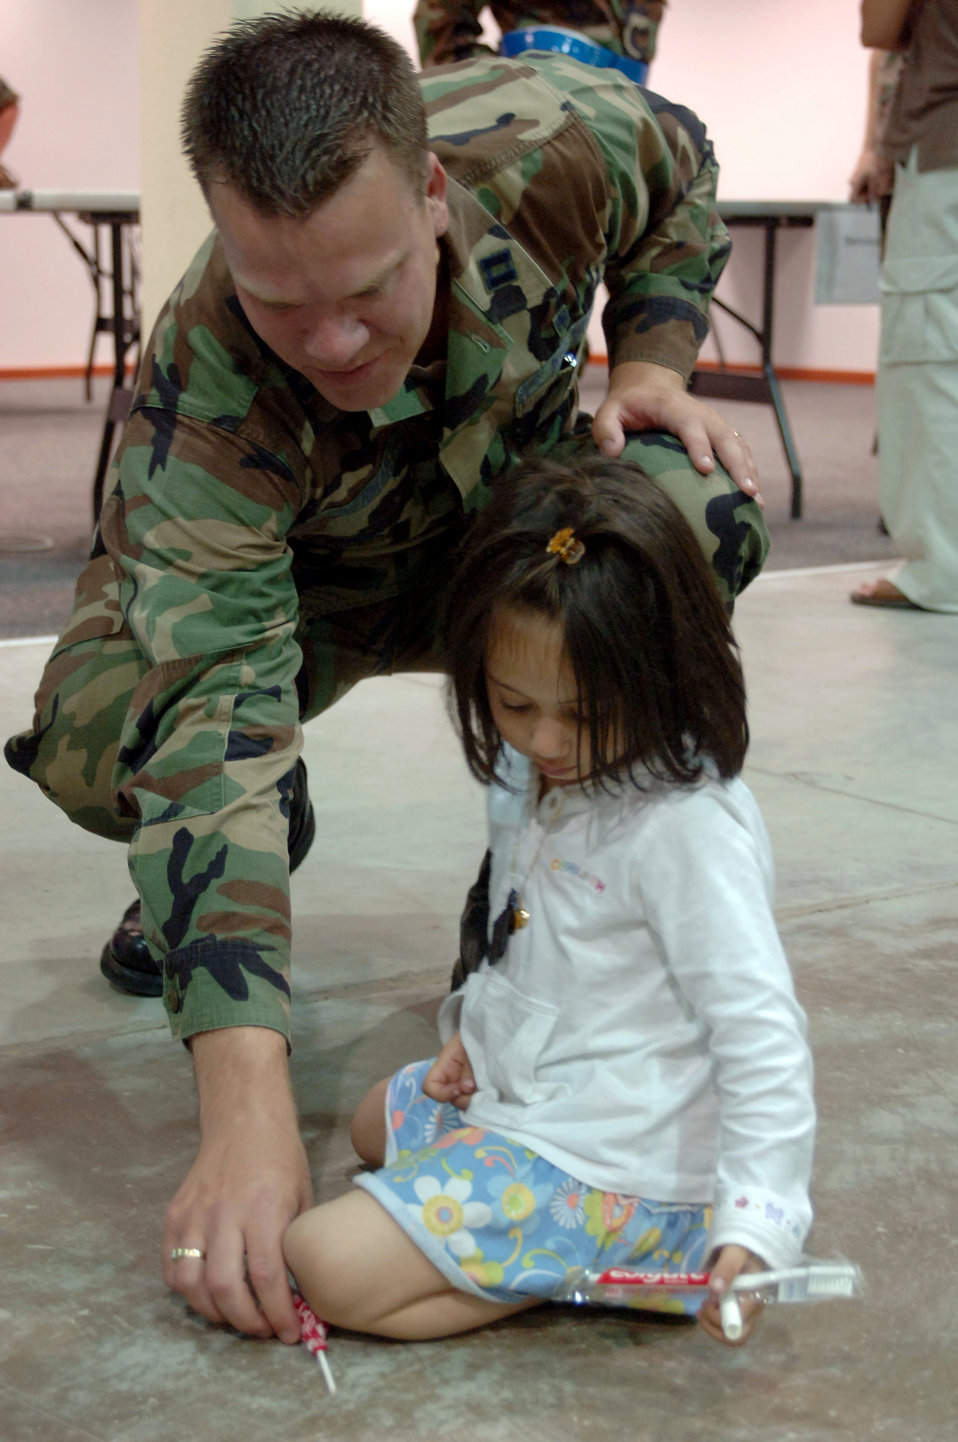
Incirlik assists Americans fleeing Lebanon

Capt. Andrew Herman retrieves 3-year-old Aisha Arnaout's lollipop during processing at Incirlik Air Base, Turkey, on July 21. Aisha is one of 29 American citizens who processed into the base today after departing Lebanon. Captain Herman is a group practice manager with the 39th Medical Group.